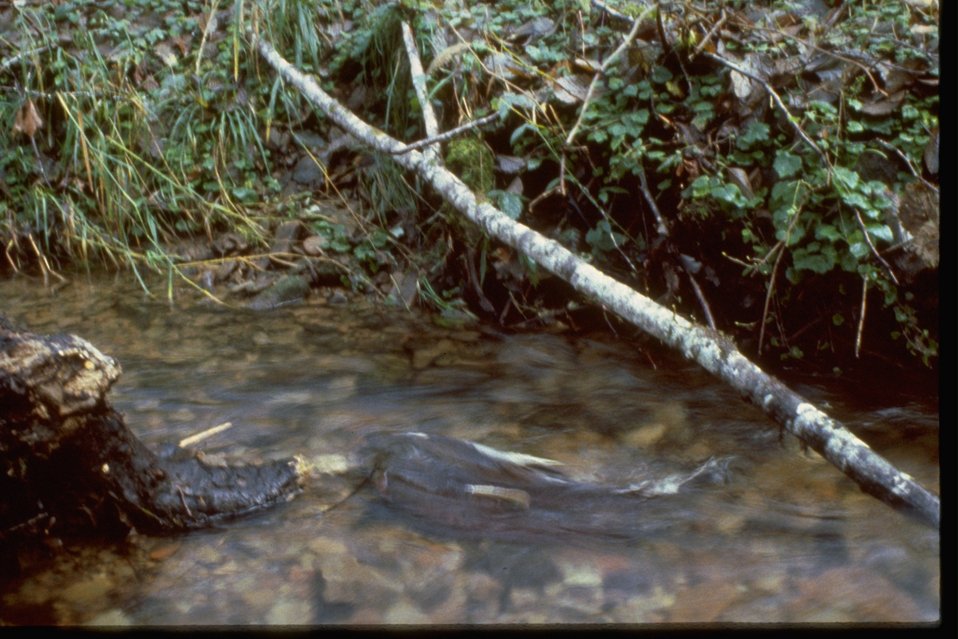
Salmon in a small stream.